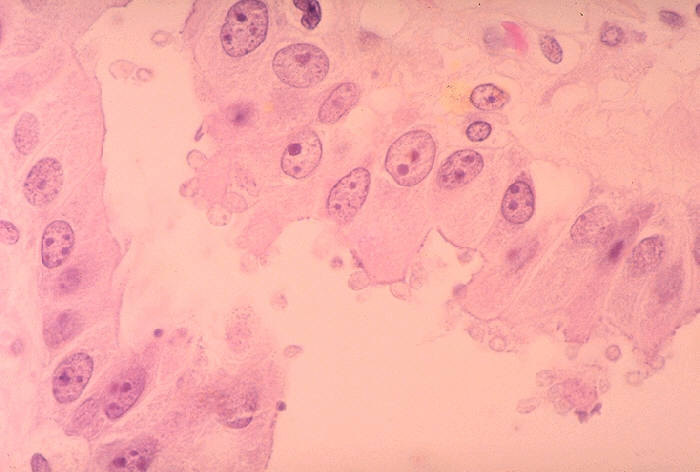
Histopathology of cryptosporidiosis, gallbladder.